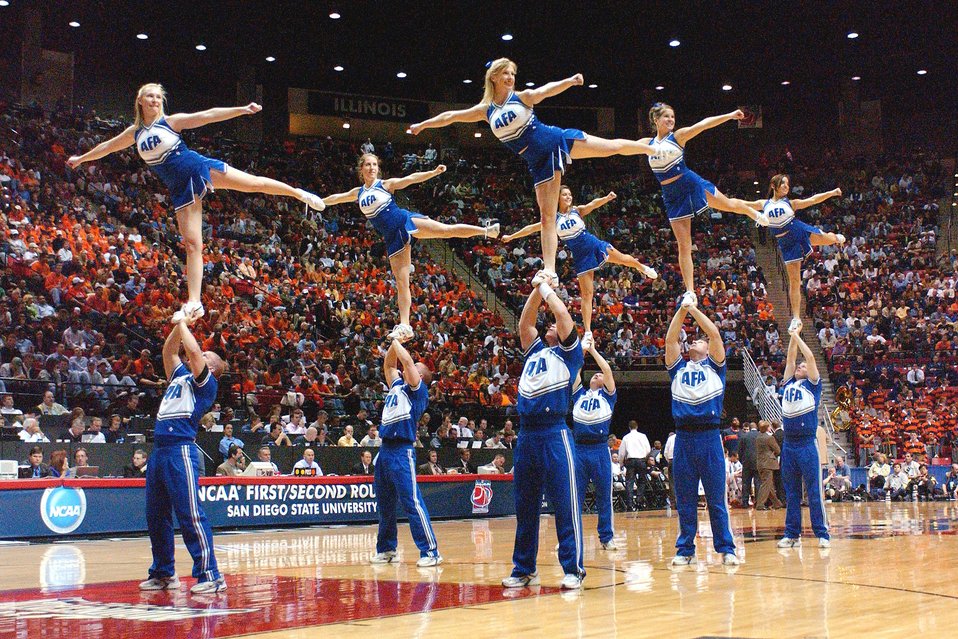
Illinois grounds Air Force

Air Force cheerleaders entertain the crowd at Cox Arena in San Diego, Calif., during a break in the NCAA Tournament game Thursday, March 16, 2006, between the Falcons and Illinois.